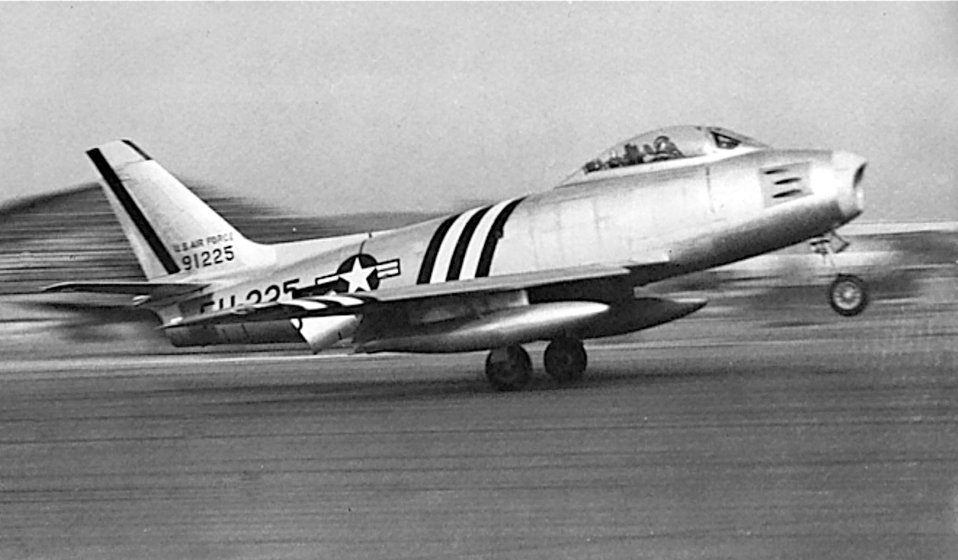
Korean War

KOREA -- The F-86 Sabre, the United States Air Force's first swept-wing jet fighter, made its initial flight Oct. 1, 1947. On September 15, 1948, an F-86A set a then-world speed record of 670.9 mph. As a day fighter, the airplane saw service in Korea in three successive series (F-86A, E, and F) where it engaged the Russian-built MiG-15. By the end of hostilities, it had shot down 792 MiGs at a loss of only 76 Sabres, a victory ratio of 10 to 1.